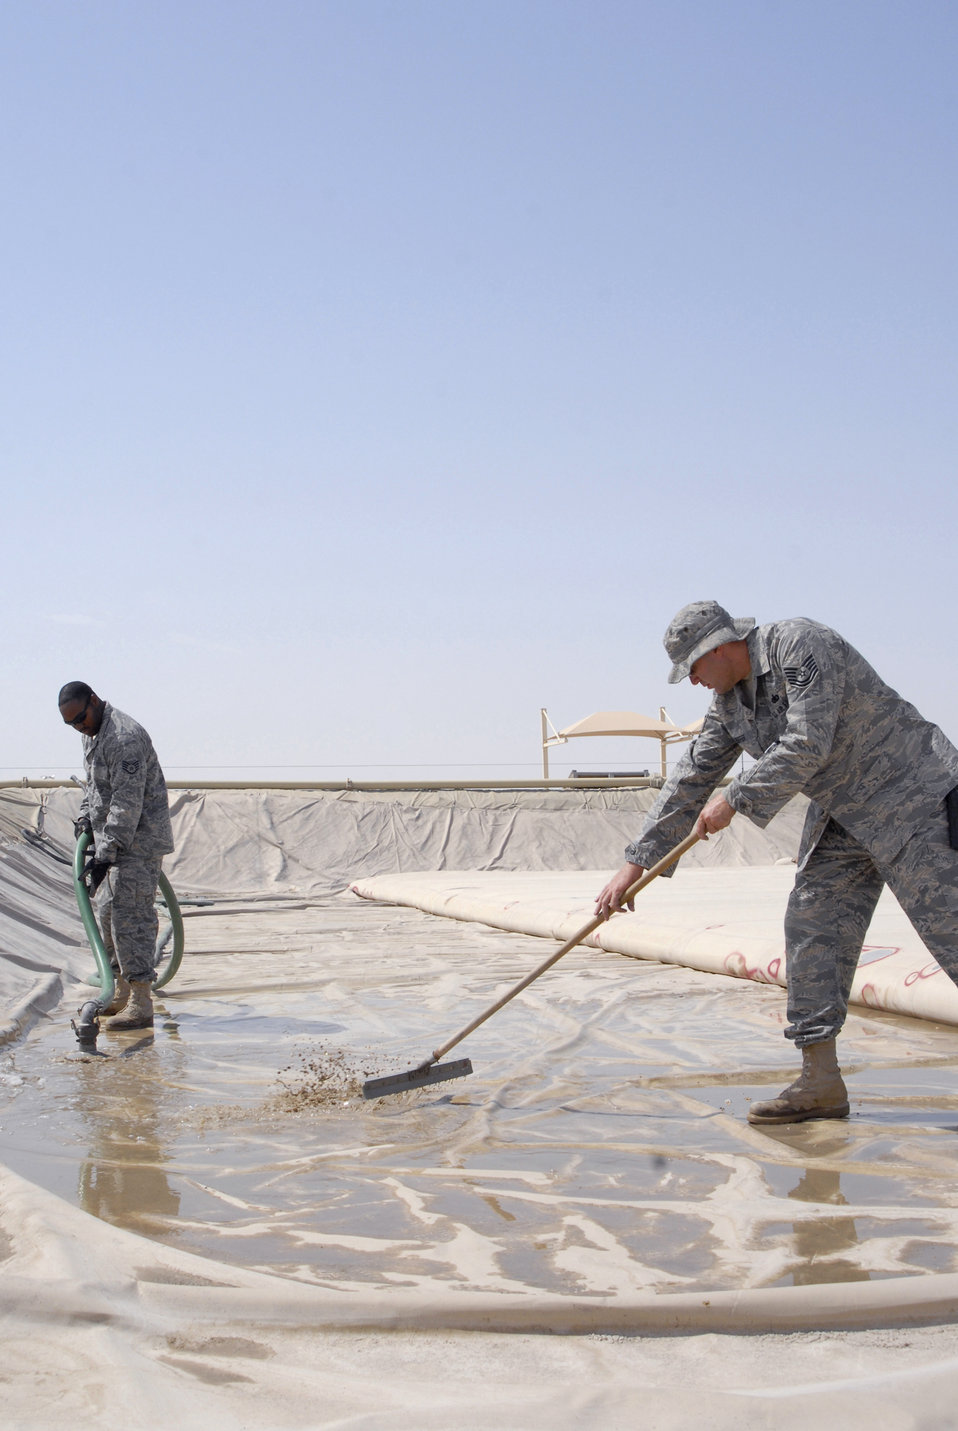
Fueling the way to mission success

Tech. Sgt. John Neiffer (right) and Staff Sgt. Carmarius Johnson, remove water in one of the fuel holding areas April 10 at an air base in Southwest Asia as a part of their preventative maintenance procedures. Fuel stored here is distributed to various locations around the base where needed to ensure mission success. Sergeant Neiffer is the 379th Expeditionary Logistics Readiness Squadron NCO in charge of the bulk expeditionary receiving transportation holding area and hails from Pottstown, Pa. He is deployed from Offutt Air Force Base, Neb. Sergeant Johnson, a bulk storage operator with the 379th ELRS, hails from Shreveport, La., and is deployed from Altus AFB, Okla.